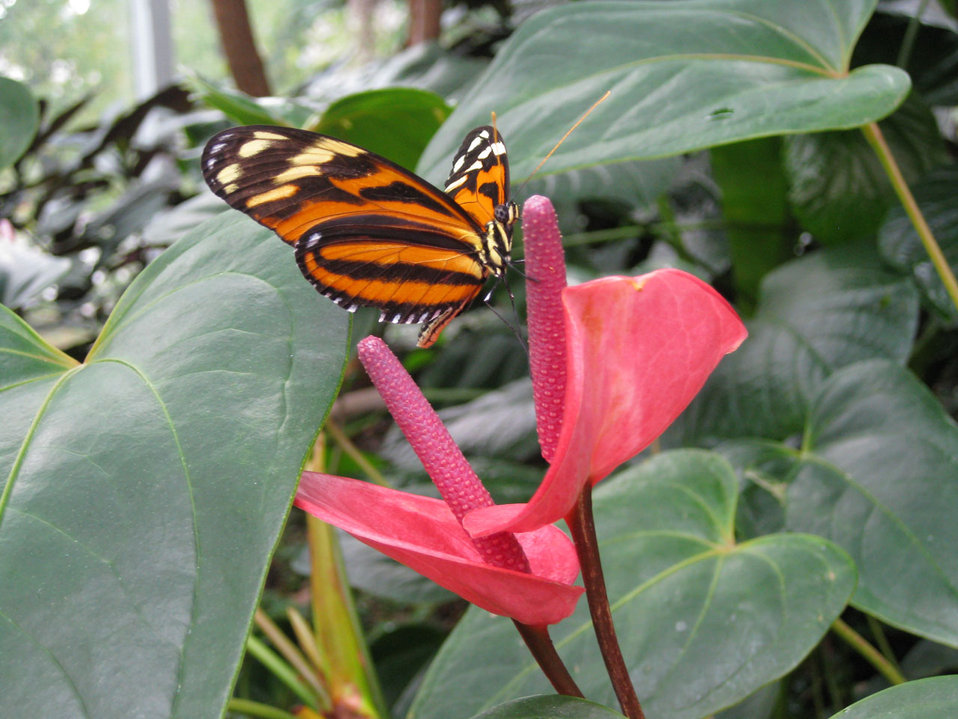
Butterfly and flower

An oragne butterfly clings to the stamen of a pink flower.